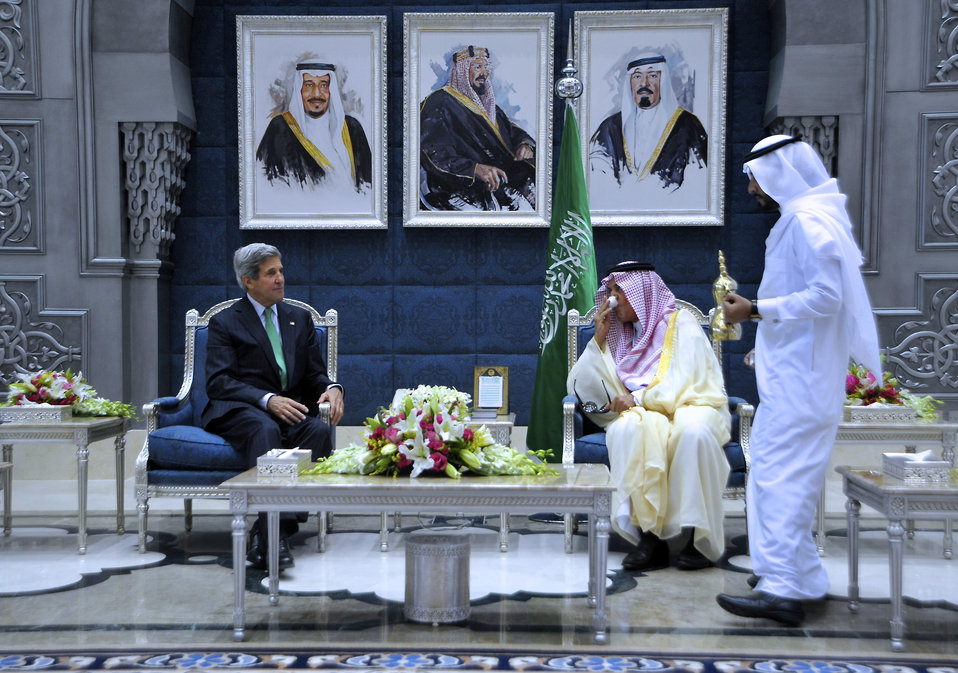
Secretary Kerry Meets With Saudi Foreign Minister al-Faisal

U.S. Secretary of State John Kerry participates in a traditional coffee ceremony with Saudi Foreign Minister Prince Saud al-Faisal upon his arrival in Jeddah, Saudi Arabia, on June 25, 2013.